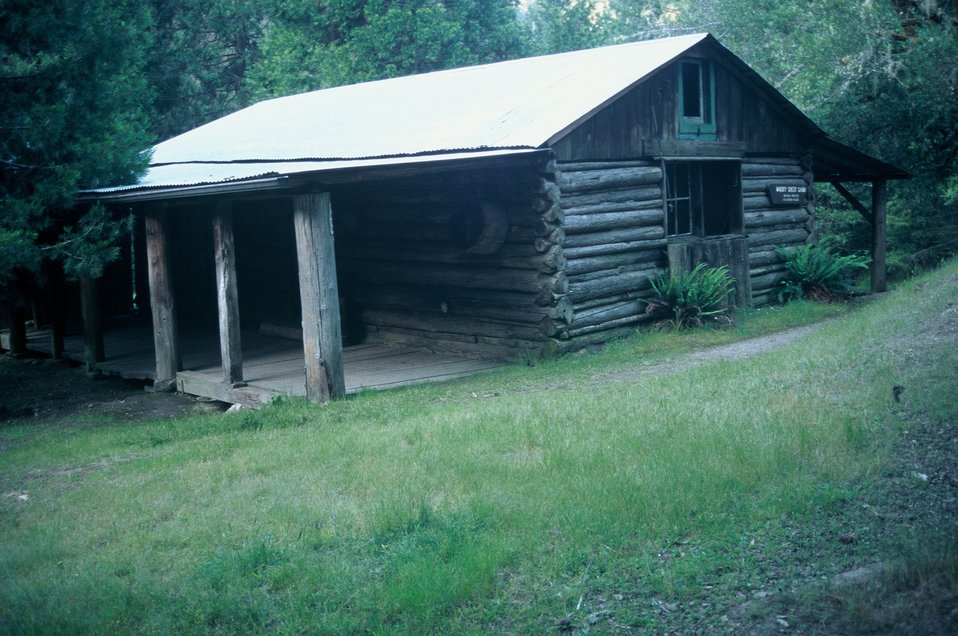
Whisky Creek Cabin along the Wild section of the Rogue River from Grave Creek to Foster Bar. 3100 cfs at Grants Pass and 5300 at Agness.